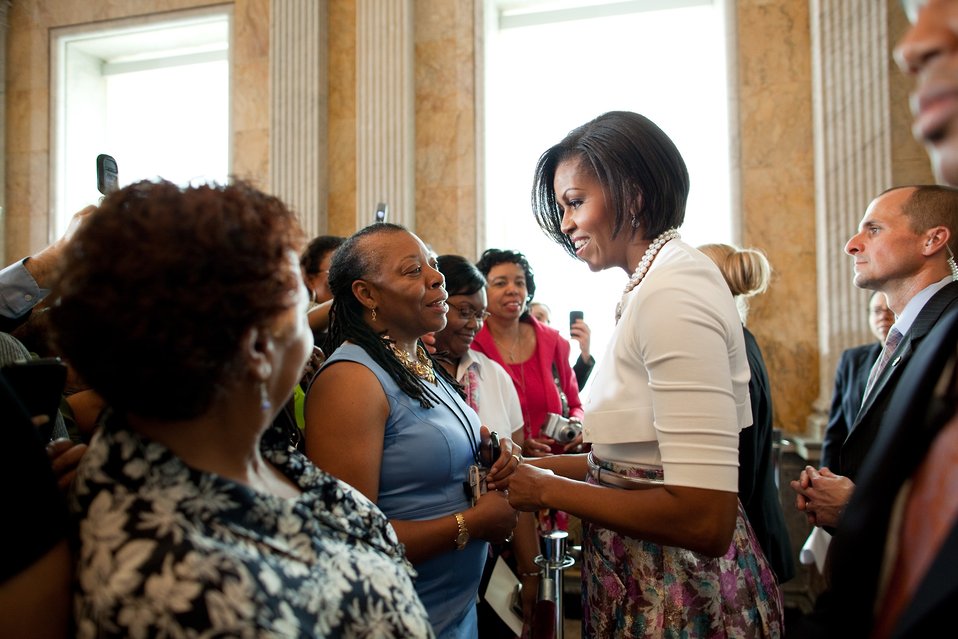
Michelle Obama visits the Treasury Department, 7/7/10

First Lady Michelle Obama greets Treasury employees during her visit to thank the Department of Treasury employees for their public service, July 7, 2010.